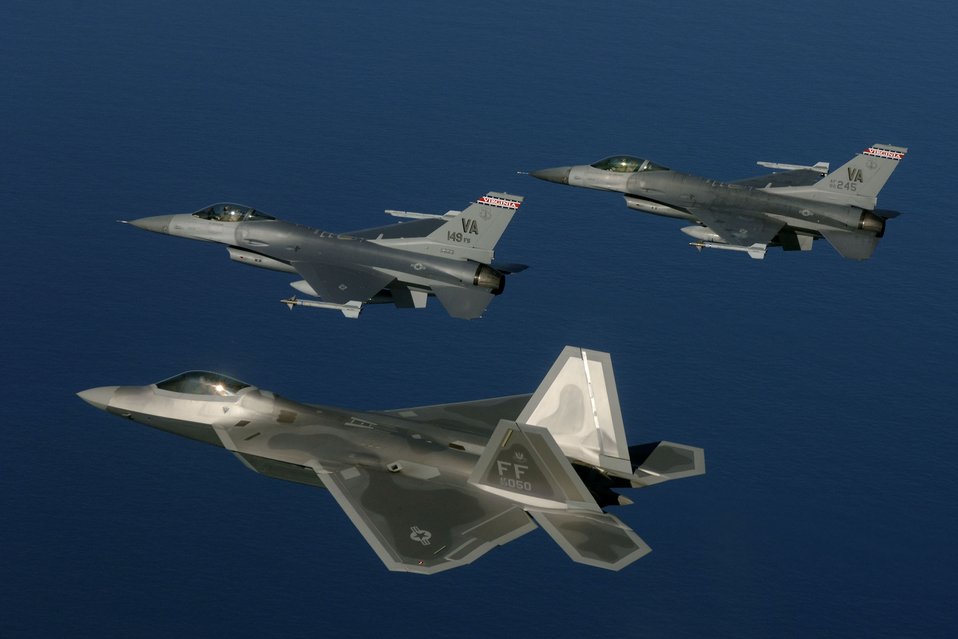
Guard fighter aircraft transition

Lt. Col. Bryan Turner and Maj. Thomas McAtee fly in formation with Lt. Col. Wade Tolliver during a training mission off the coast of Virginia on Thursday, March 30, 2006. The Virginia Air National Guard is currently transitioning to the new F-22A Raptor and will replace the F-16 Fighting Falcons as early as October 2007. Colonel Turner and Major McAtee are F-16 pilots assigned to the Virginia ANG's 149th Fighter Squadron at Sandstone, Va. Colonel Tolliver is an F-22A Raptor pilot with the 27th Fighter Squadron at Langley.